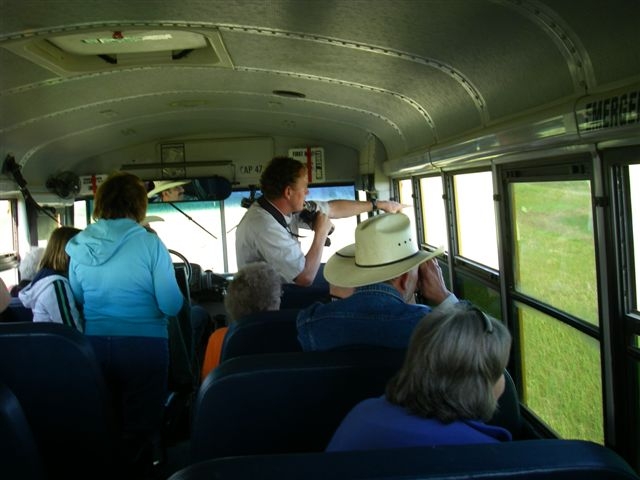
Safari at Lostwood NWR

Lostwood National Widlife Refuge Manager Doug Leschisin leads a safari tour during the annual Birding Festival.